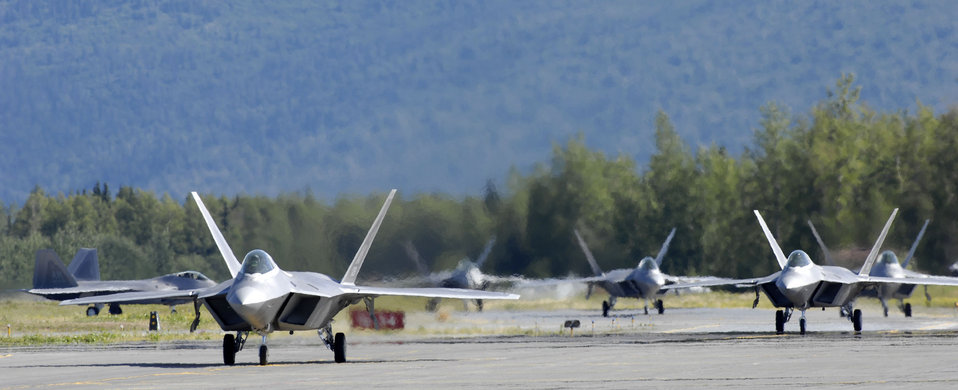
Elmendorf welcomes F-22 Raptor

Six F-22 Raptors taxi following touchdown at Elmendorf Air Force Base, Alaska, during a ceremony marking the aircraft's arrival Aug. 8. The F-22s will join the active duty 3rd Wing and Air Force Reserve Command's 477th Fighter Group here. The 477th FG becomes the first Air Force Reserve unit to operate and maintain the F-22.